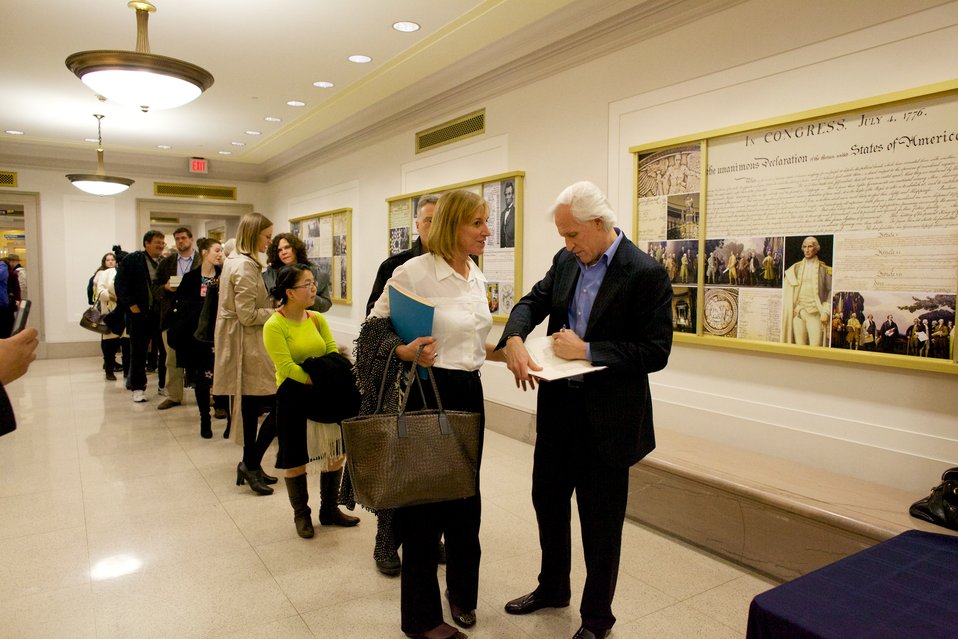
The Monuments Men; Robeert Edsel (right), greets and autographs books for lecture attendees